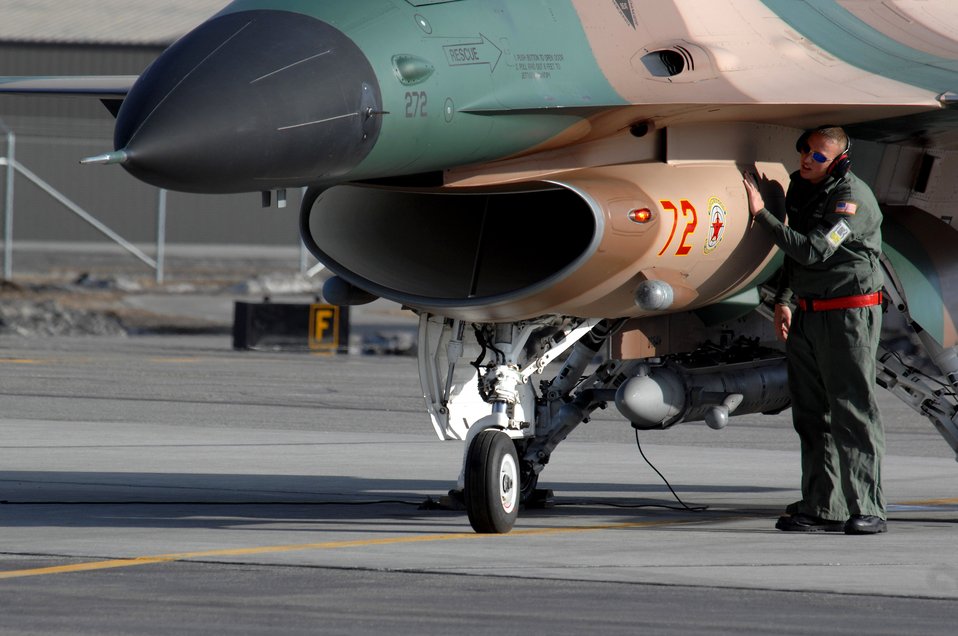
Getting ready to rumble

A maintainer from the 64th Aggressor Squadron at Nellis Air Force Base, Nevada, preps an